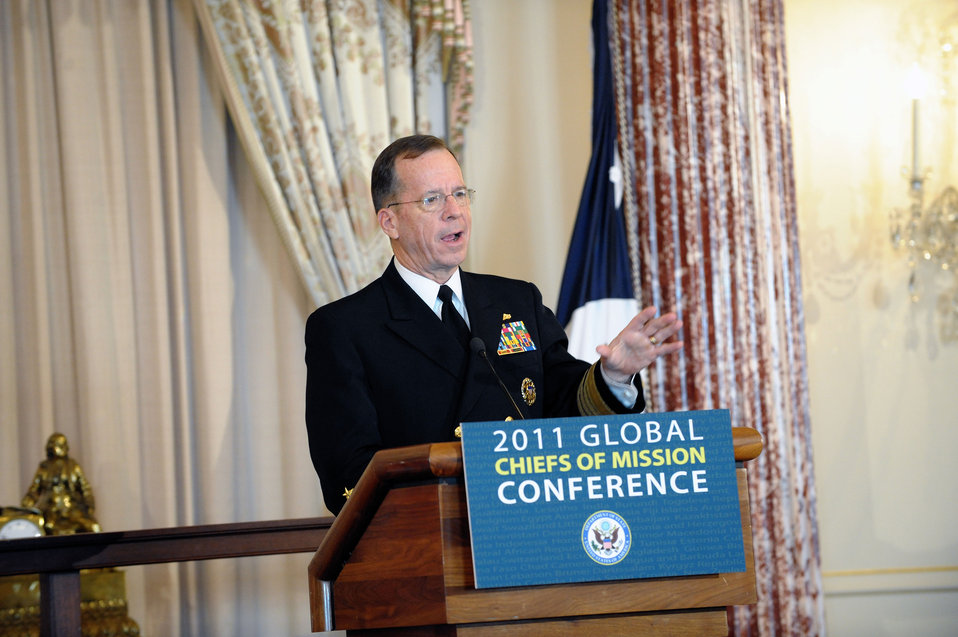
Admiral Mullen Delivers Remarks

Chairman of the Joint Chiefs of Staff, Admiral Michael Mullen, delivers remarks at the 2011 Global Chiefs of Mission Conference at the U.S. Department of State in Washington, D.C., on February 2, 2011.